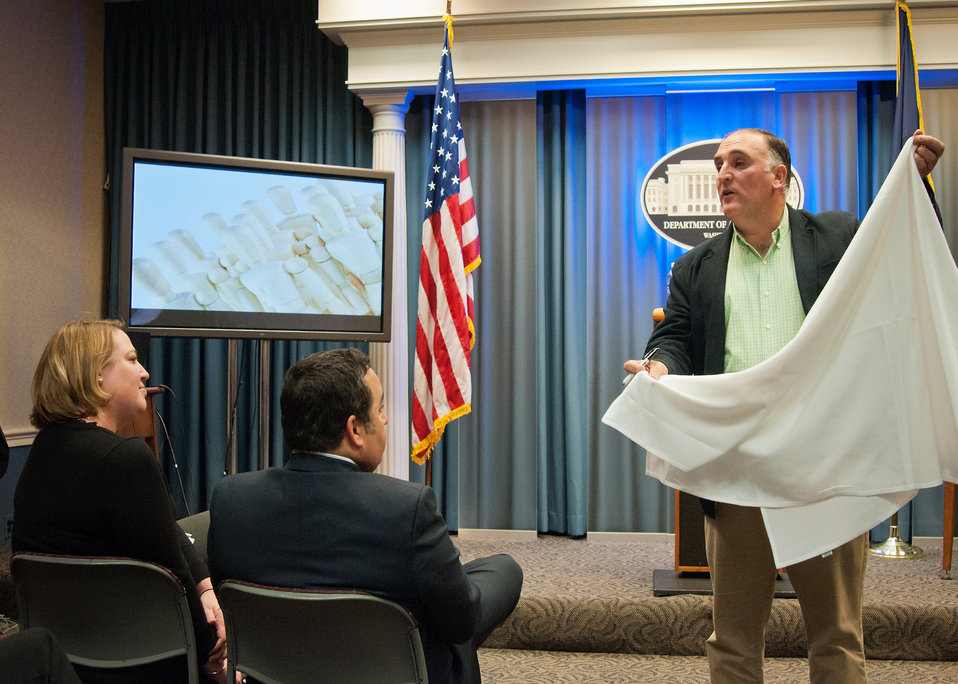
Chef Jose Andres, Chef/Owner, Think Food Group the guest speaker at the kick-off meeting of the United States Department of Agriculture White House Liaison Weekly Political Appointee Meeting for the New Year in Washington, DC, Thursday, January 20, 2012. Chef Andres used a tablecloth to demonstrate the traditional organizational chart and how to better utilize the structure of the chart.